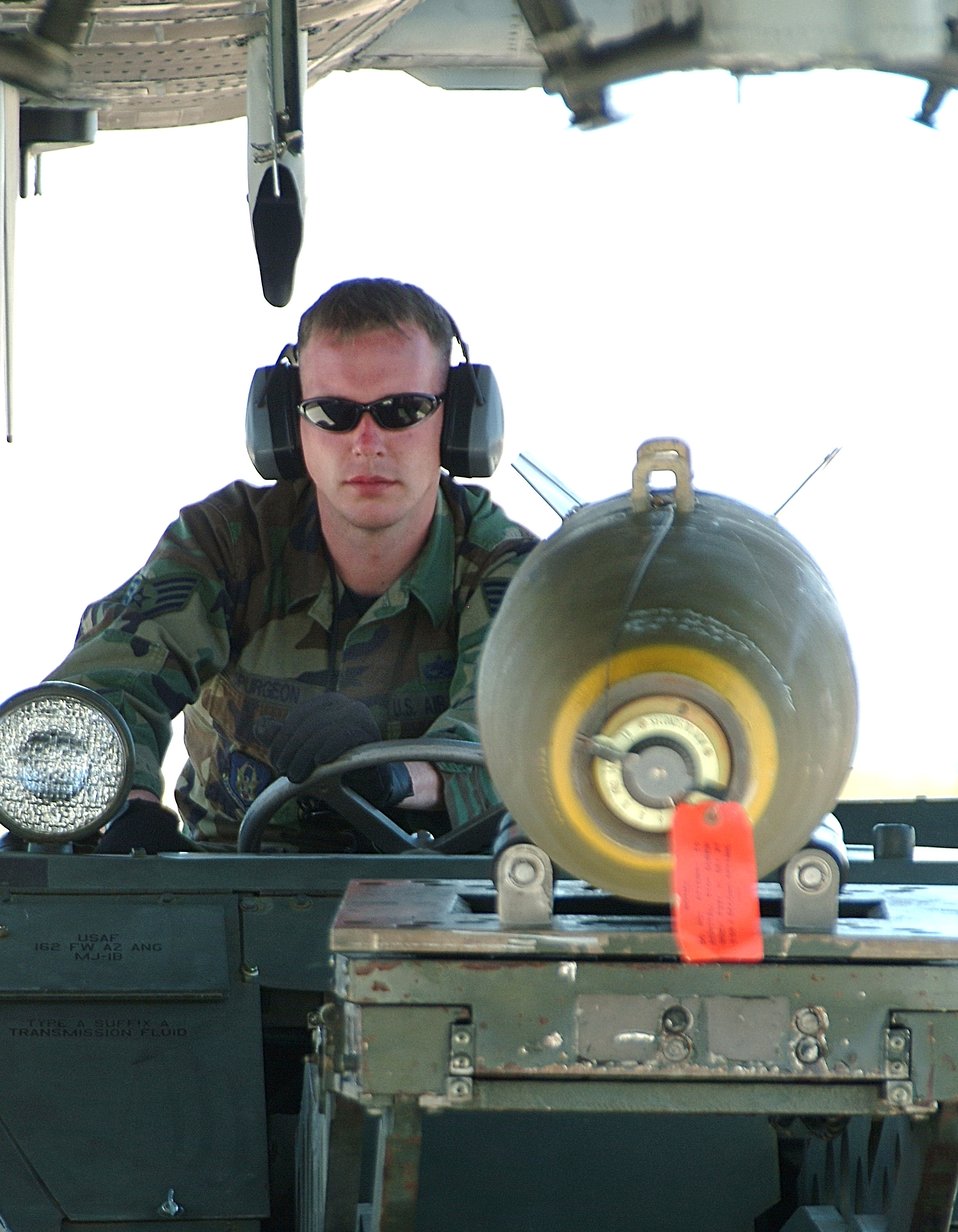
Missouri fighter wing goes to wild, wild west

Staff Sgt. Stephen Spurgeon drives a jammer with a 500-pound bomb for loading on an A-10 Thunderbolt II at Davis Monthan Air Force Base, Ariz., during his unit's